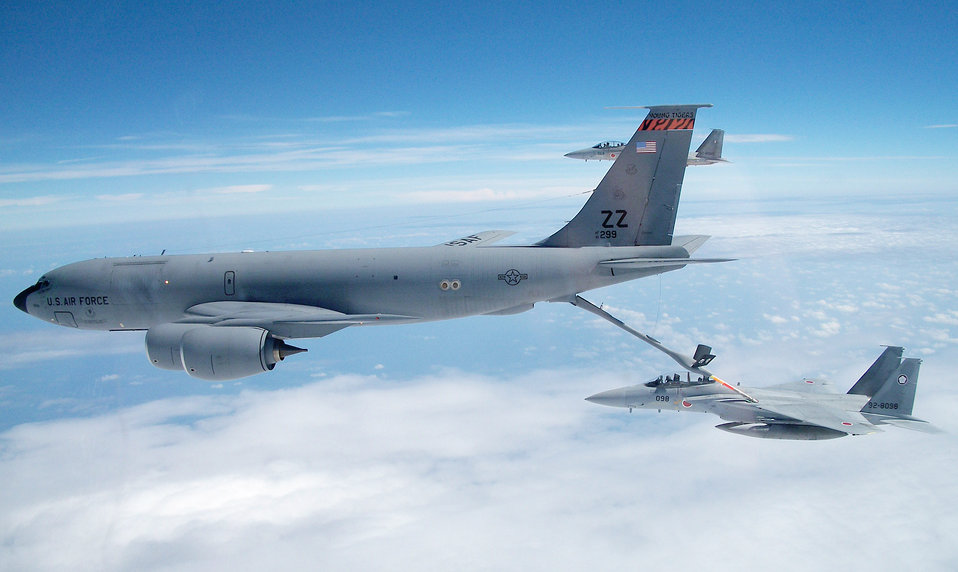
Airmen prepare JASDF pilots

Crewmembers on a 909th Air Refueling Squadron KC-135 Stratotanker refuel a Japan Air Self Defense Force F-15 Eagle during bilateral air refueling training May 17, 2010, at Kadena Air Base, Japan.